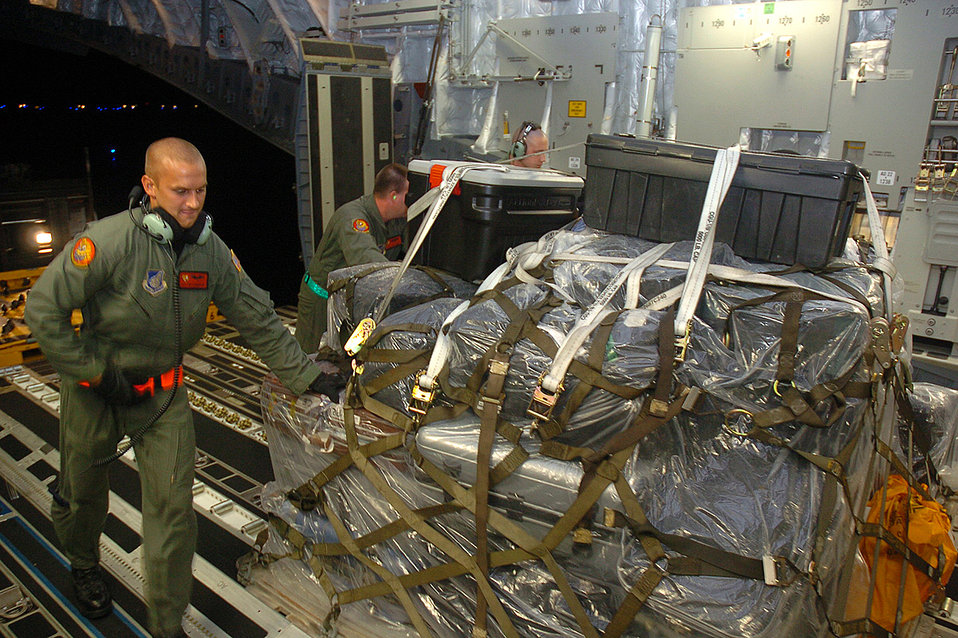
Wake Island evacuates

Airman 1st Class Josh Robinson, 535th Airlift Squadron, helps load a pallet of bags onto a Hickam based C-17 Globemaster III at Wake Island Monday. The 188 occupants of the island were evacuated prior to Super Typhoon Ioke reaching the tiny U.S. territory. Ioke is expected to hit the island around 8.p.m. EDT Wednesday.